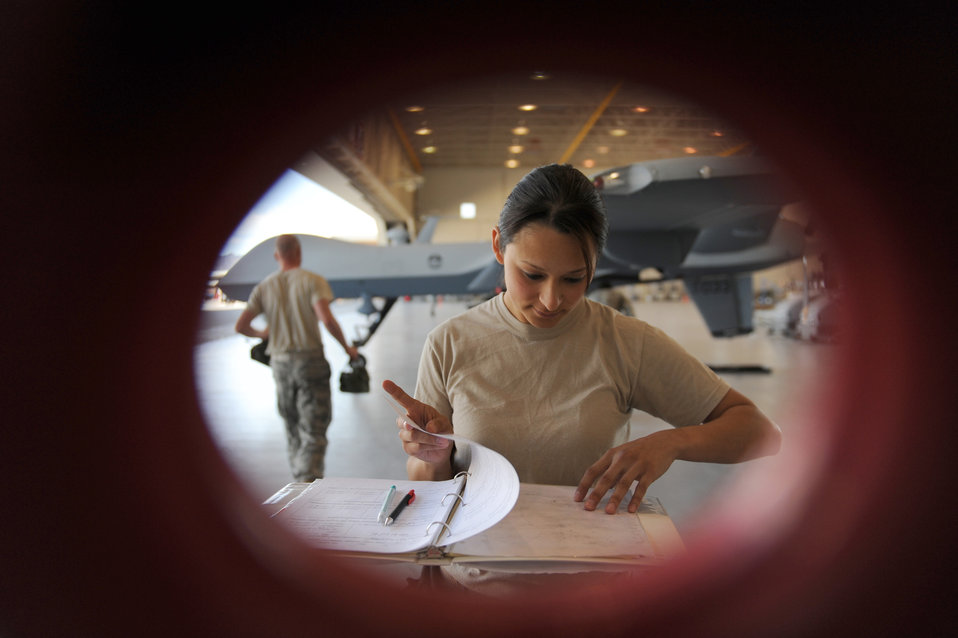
Training for unmanned aircraft systems

Staff Sgt. Stephanie Hughes reviews loading procedures during weapons load training April 22 at Creech Air Force Base, Nev. MQ-9 Reaper load crewmembers were conducting monthly training to maintain their qualifications on the airframe. Sergeant Hughes is a Reaper load crew team chief assigned to the 432nd Aircraft Maintenance Squadron.